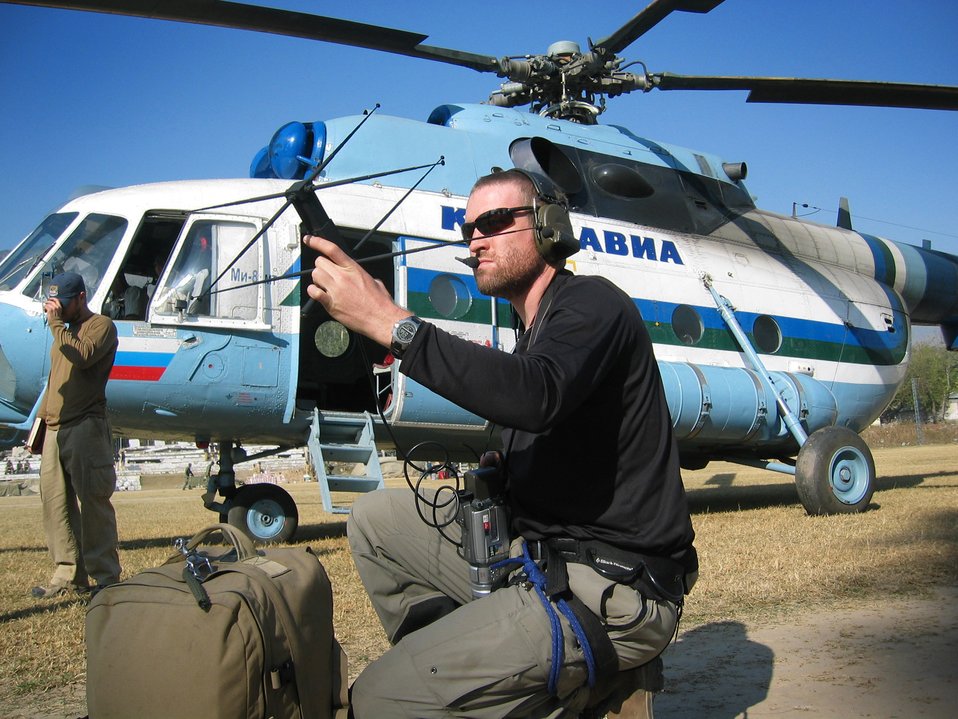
PJs support relief ops

ISLAMABAD, Pakistan (AFPN) -- Tech. Sgt. Chris Robertson attempts to contact his command unit in Islamabad, Pakistan. Pararescuemen from the 212th Rescue Squadron at Kulis Air National Guard Base in Anchorage, Alaska, are supporting the humanitarian relief operation in Pakistan. Sergeant Robertson is a pararescueman.